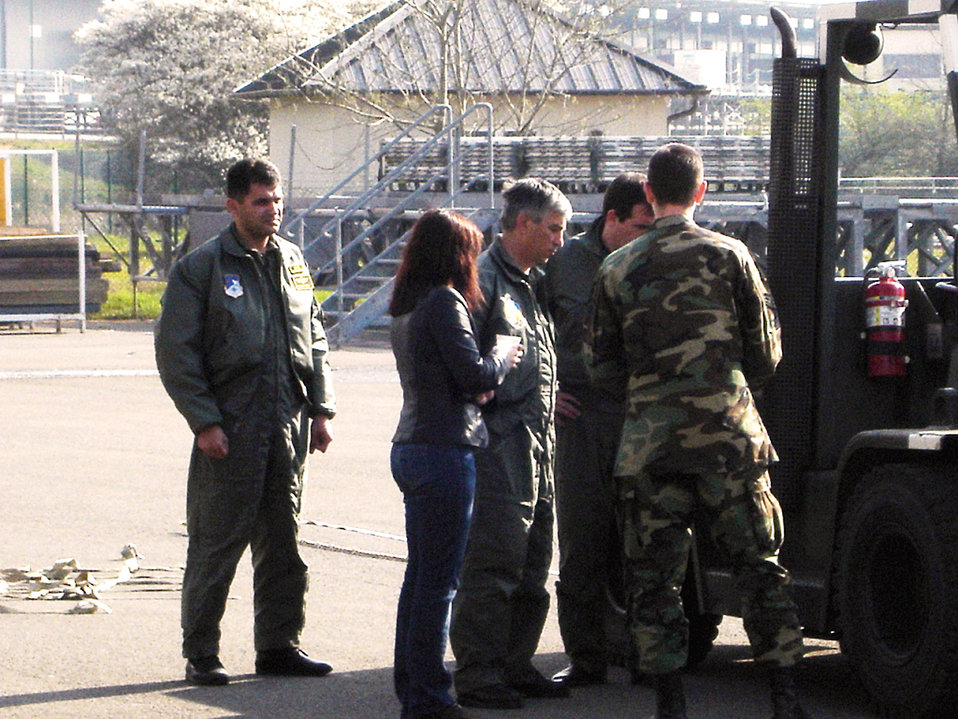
Bulgarian officers learn deployment how-tos during visit to Ramstein

Bulgarian air force officers, Col. Marin Natchev, Col. Evgeni Belkinov, and Lt. Col. Dimitar Ivanov, take a tour April 23 at Ramstein Air Base, Germany. With help from their interpreter, Vesela Terzieva, they learned about the deployment methods for Airmen heading downrange. The Bulgarian air force is setting up its expeditionary units, and officials wanted to see how the U.S. Air Force prepares and trains its troops before their deployments.